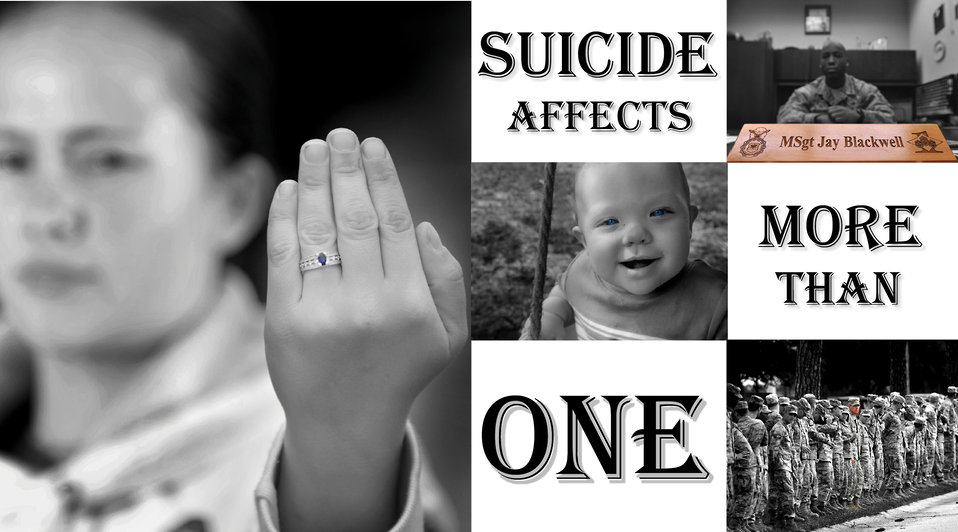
More Than One

An Airman from the 723rd Aircraft Maintenance Squadron committed suicide Jan. 26, 2009, because of personal reasons. Suicide is often spoken about as if one person is affected, but only the individuals left behind truly understand the full impact of that decision.